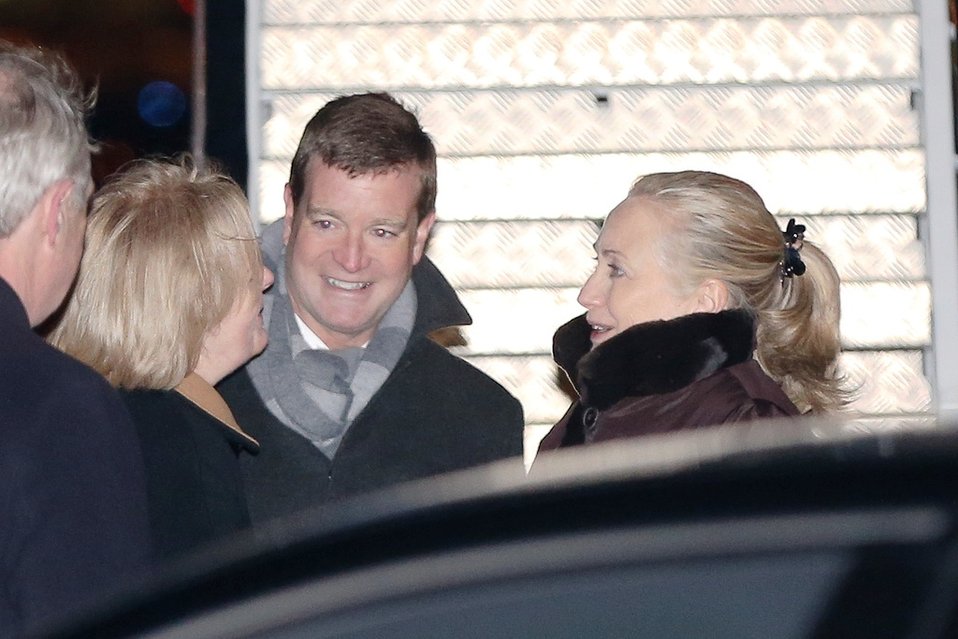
Secretary Clinton Is Greeted Upon Her Arrival in Dublin

U.S. Secretary of State Hillary Rodham Clinton is greeted by Orla O'Hanrahan, Chief of Protocol of the Irish Ministry of Foreign Affairs, and John Hennessey Niland, Charge d'Affaires of the U.S. Embassy in Dublin, Ireland, upon her arrival in Dublin, Ireland, December 5, 2012.